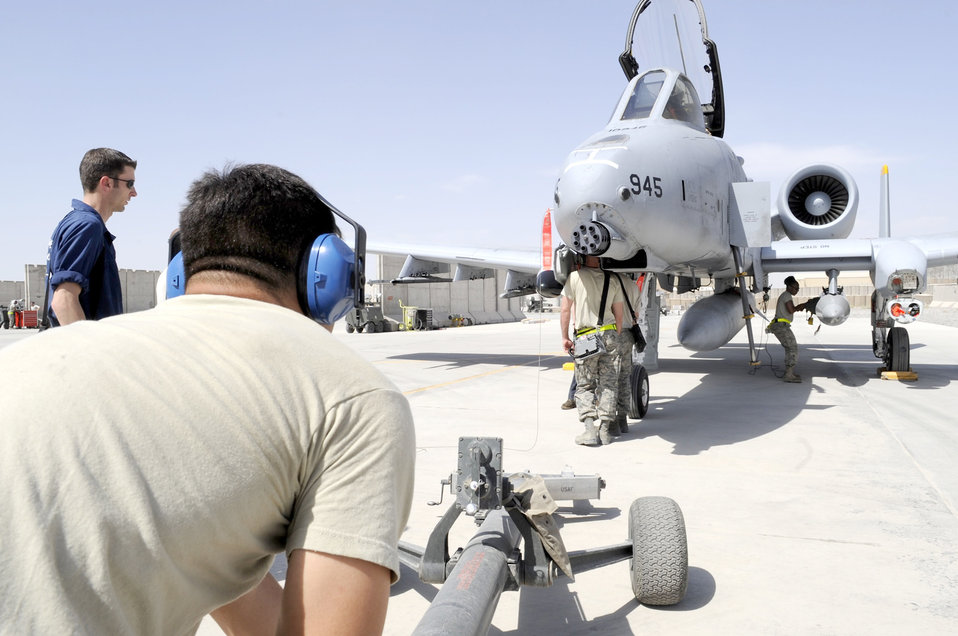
A-10 Thunderbolt II post-flight check

Crew members of the 81st Expeditionary Aircraft Maintenance Squadron prepare to set a tow bar to the nose wheel of an A-10 Thunderbolt II May 11, 2010, at Kandahar Airfield, Afghanistan.